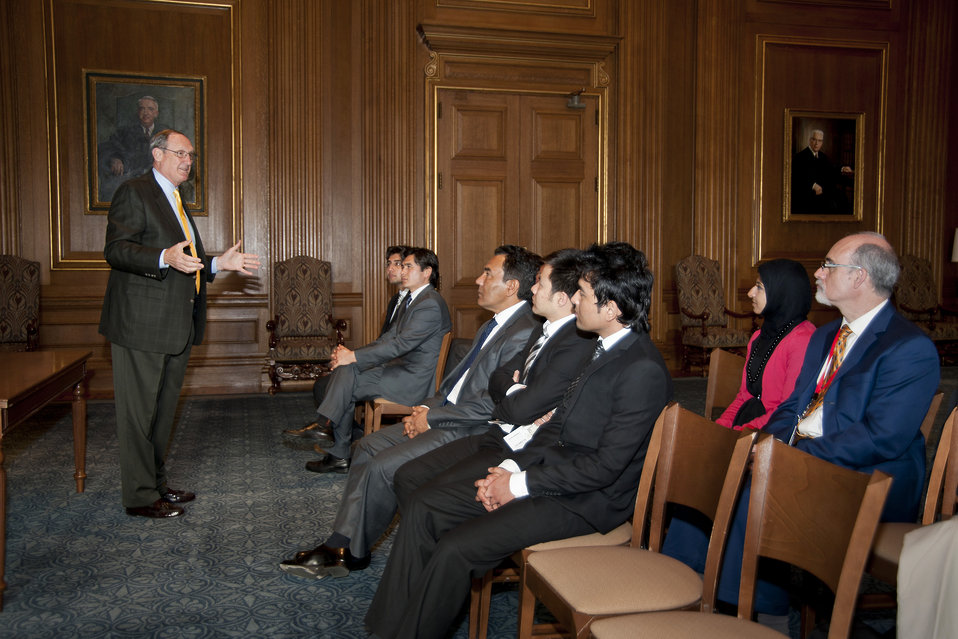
Clerk Suter Speaks With 2012 Jessup Moot Court Competitors from Afghanistan

Clerk of Court William Suter speaks with USAID-funded 2012 Philip C. Jessup Moot Court Competitors from Afghanistan during their visit to the Supreme Court of the United States in Washington, D.C., on March 29, 2012.